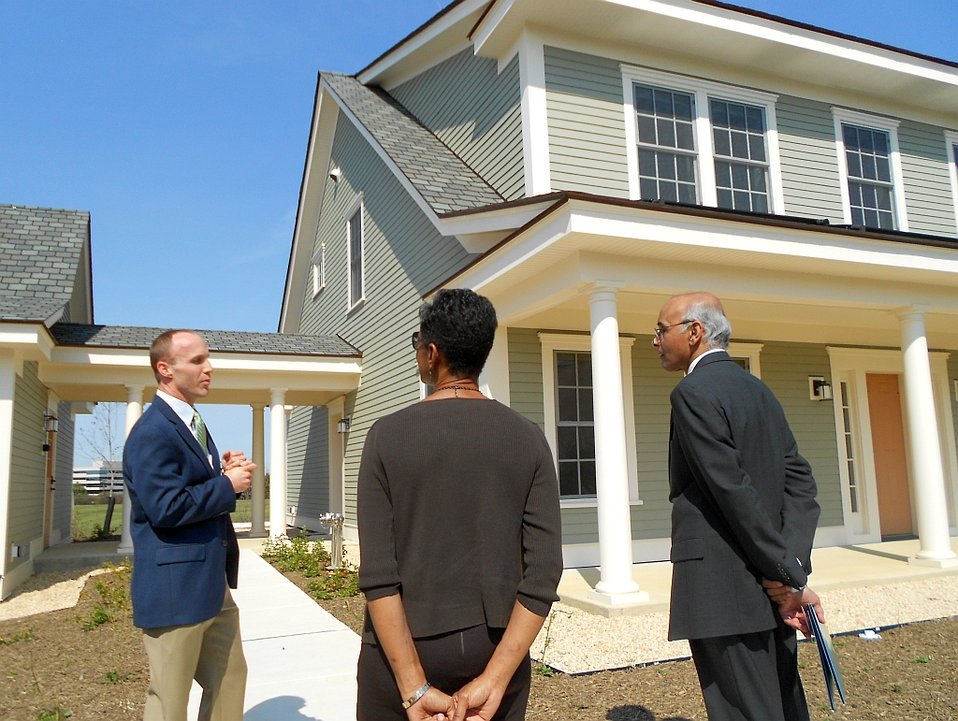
Edwards NZERTF Tour #6

William Healy (left), Leader of the Alternative Energy Systems Group in NIST’s Engineering Laboratory, U.S. Congresswoman Donna Edwards (center) from Maryland’s 4th District, and NIST Engineering Laboratory Director Shyam Sunder (right) tour the outside of the NIST Net Zero Energy Residential Test Facility.